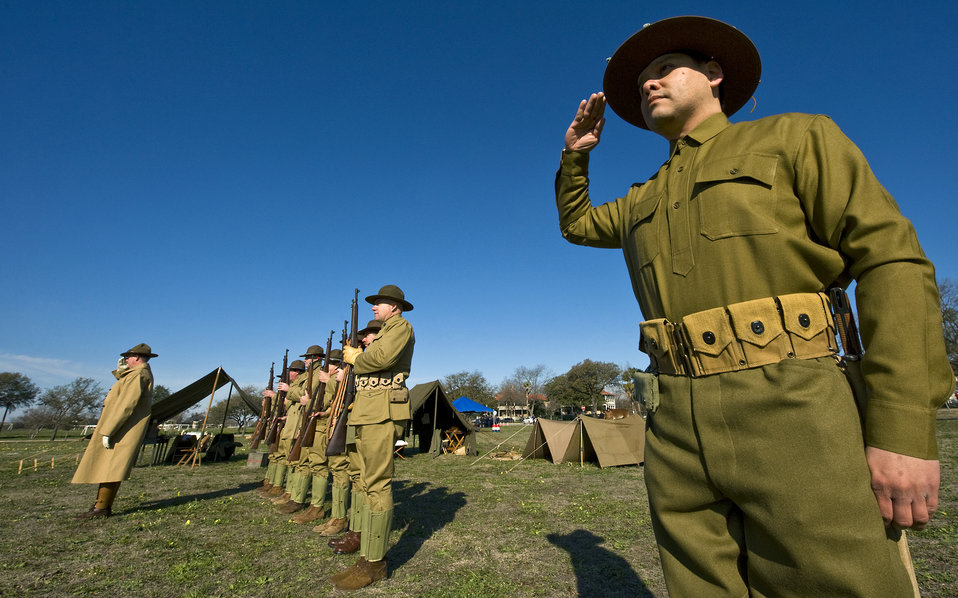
Military, civilians celebrate 100 years of military flight

Members of the Texas Military Forces Museum, who are dressed in replica Army uniforms of 1910, render a salute during the opening ceremonies of the Fort Sam Houston Foulois Centennial Military Flight Celebration March 2, 2010 at Fort Sam Houston, Texas.